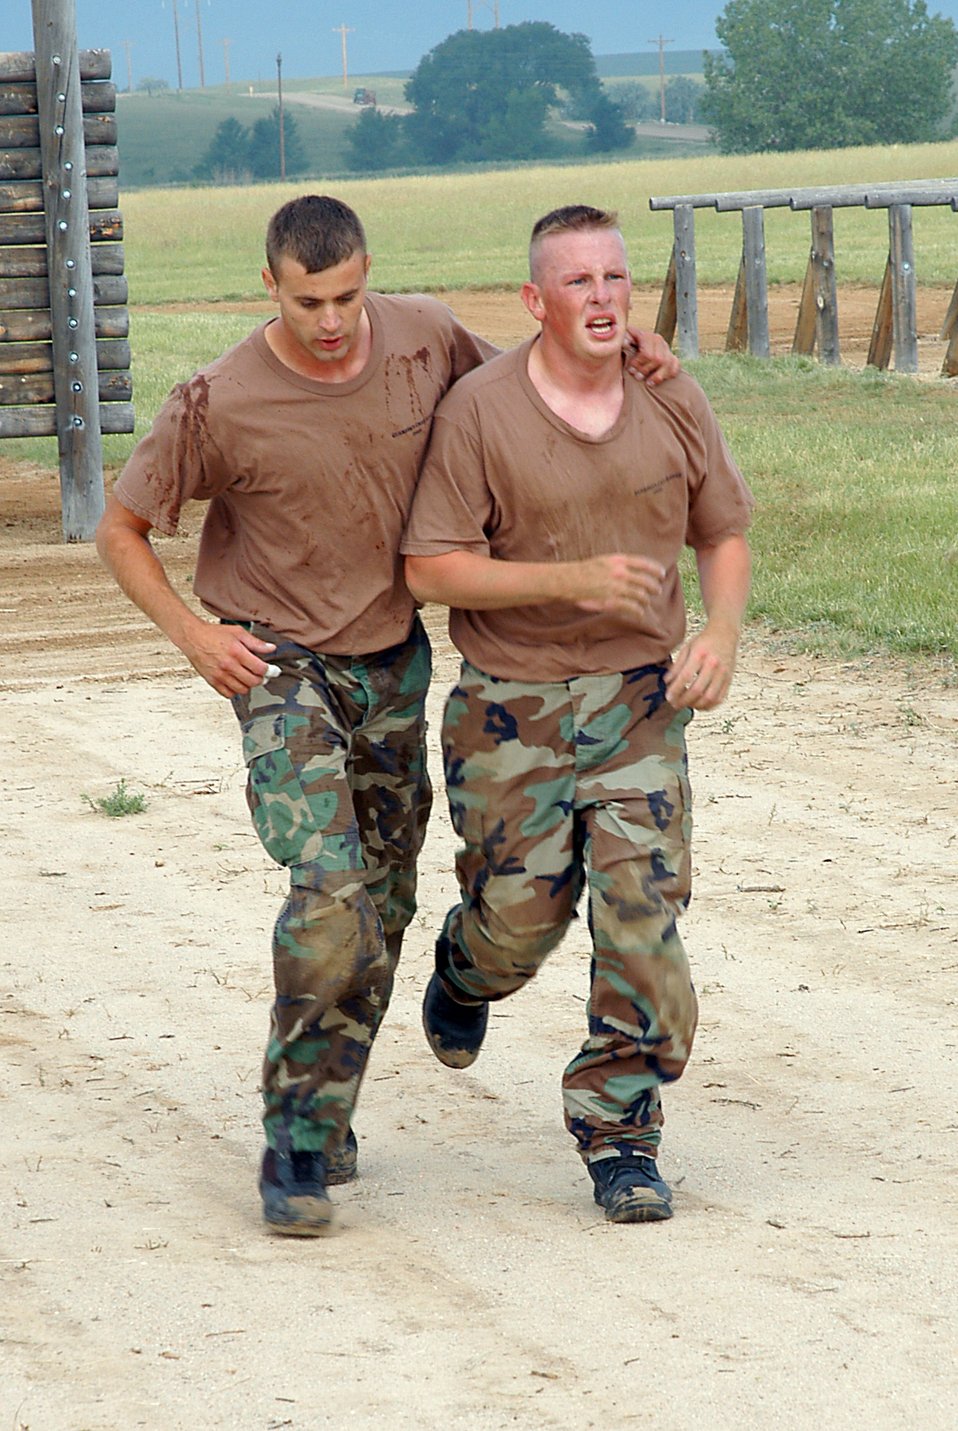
Guardian Challenge

Tech. Sgt. Brian Johnson (left) runs alongside Staff Sgt. Scott Willis at the Guardian Challenge obstacle course on Aug. 16. Sergeant Willis injured his ankle, but team members stuck together in a display of wingmanship. The NCOs are with the 50th Security Forces Squadron at Schriever Air Force Base, Colo.